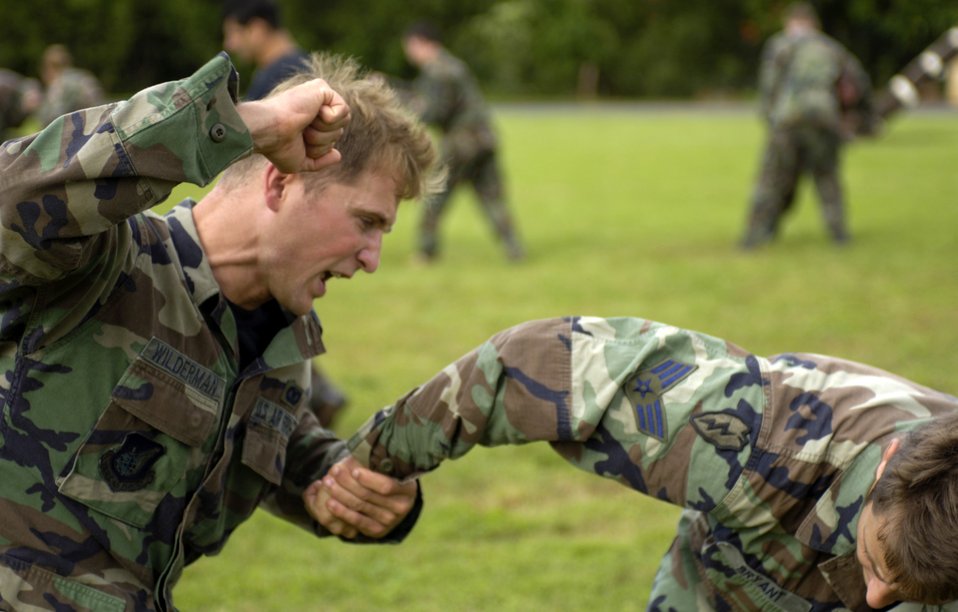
Close-combat skills

Senior Airmen Glenn Wilderman and Nathanial Bryant practice close-combat skills at Wheeler Army Air Field, Hawaii, on Thursday, April 13, 2006. The Airmen are tactical air controllers from the 25th Air Support Operations Squadron.